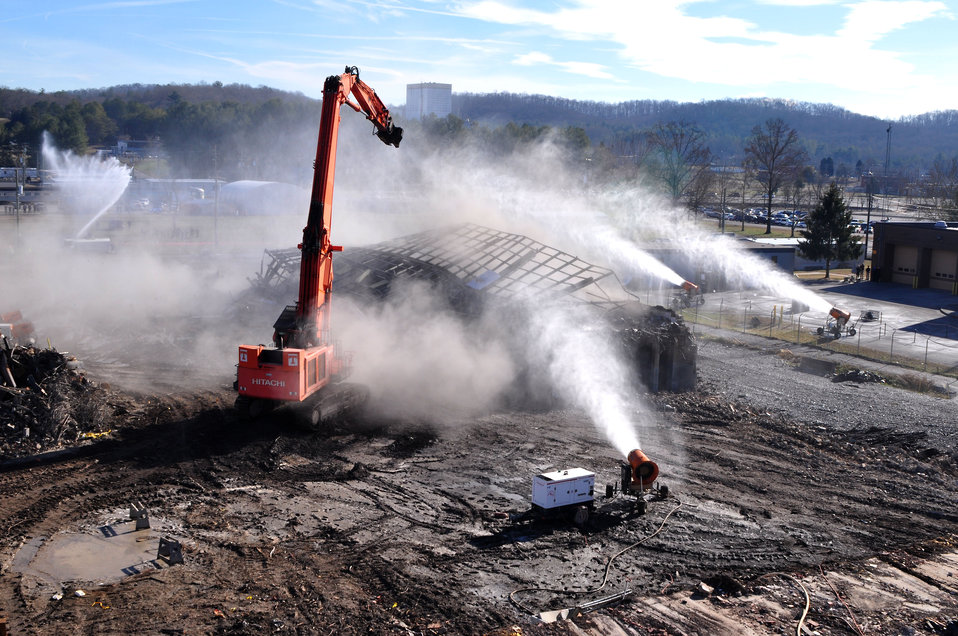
Last Part of K-25 Coming Down Oak Ridge 2013

13-157-1 DOE photo Lynn Freeny 12-19-2013 Oak Ridge Tennessee